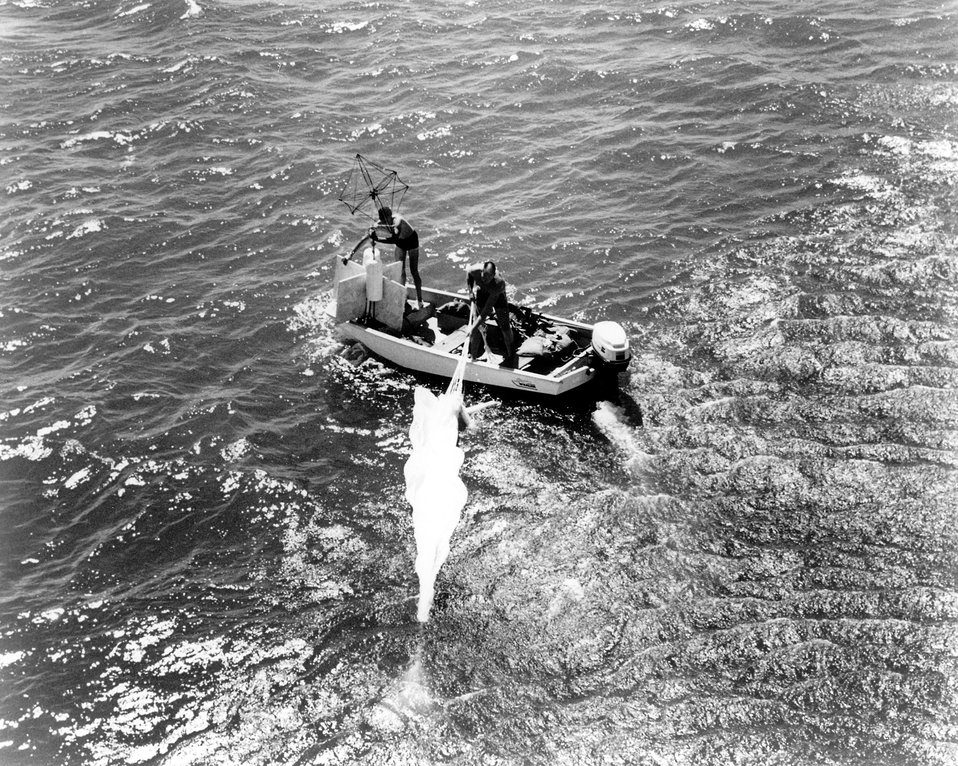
Here researchers of the U.S. Atomic Energy Commission's Puerto Rico Nuclear Center deploy a parachute from a boat in the Bay of Jobos in southern Puerto Rico. Circa 1972.